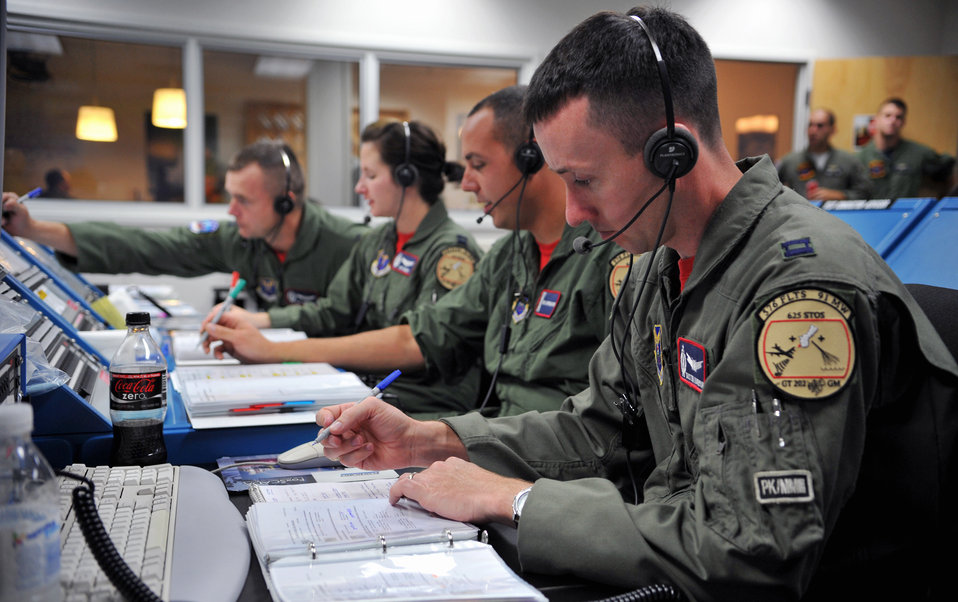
Vandenberg Airmen conduct Minuteman III flight test

Launch team members from the 576th Flight Test Squadron conduct pre-flight operations for a Minuteman III intercontinental ballistic missile launch Sept. 17, 2010, at Vandenberg Air Force Base, Calif. The launch tested the missiles operational effectiveness, readiness and accuracy.